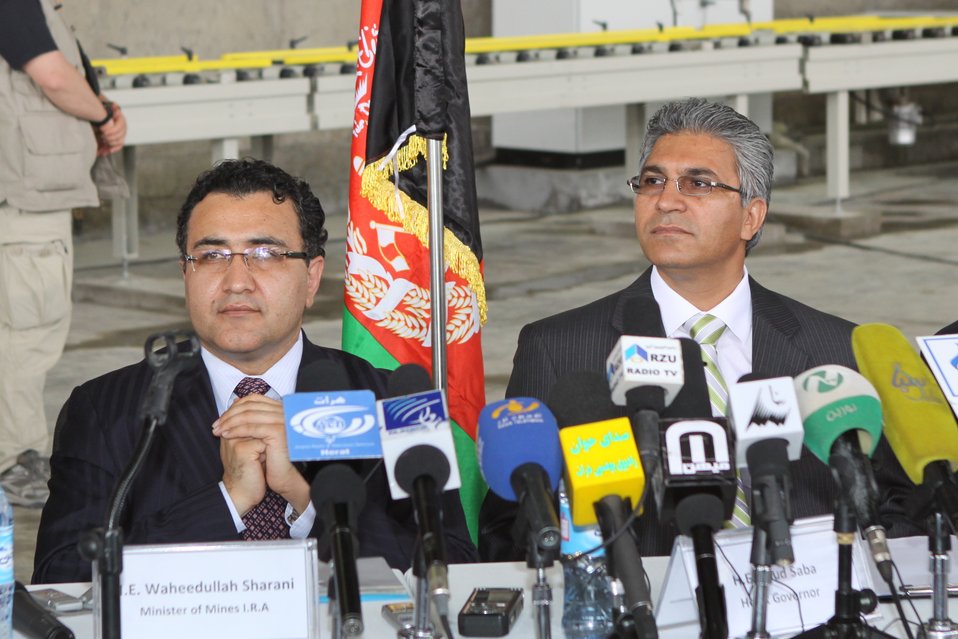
100525 Hirat Marble Conference 312